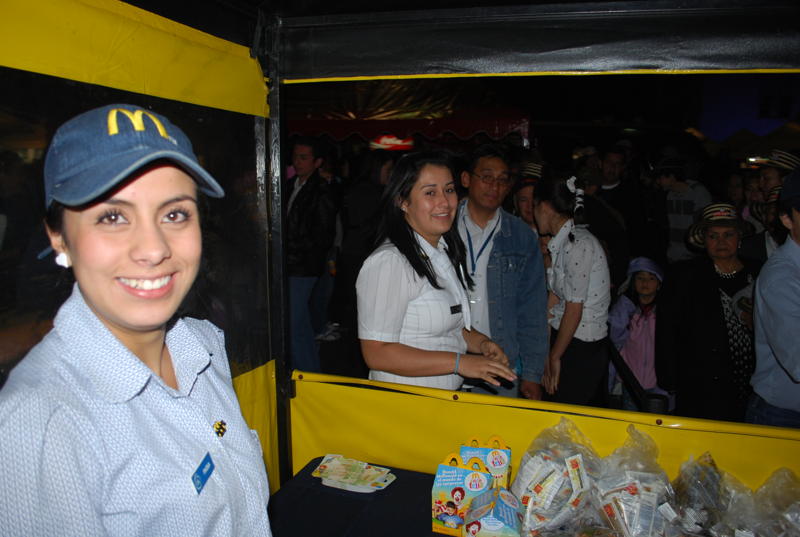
A Member of the McDonald’s Staff Serves Food

A member of the McDonald's staff, one of the several U.S. companies that sponsored the event, serves food during the U.S. Independence Day “State Fair” Community Event at the U.S. Embassy Bogotá in Colombia, on July 2, 2010.